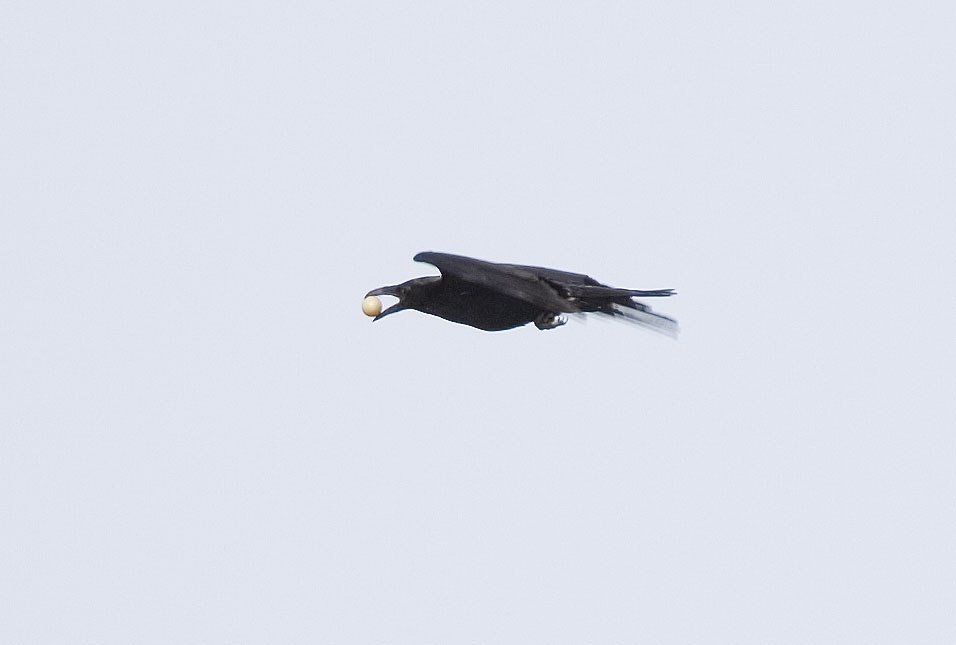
A Crow Flying With an Egg in its Mouth!

The lands of the refuge were established to protect and provide habitat for migratory birds that cross State lines and international borders and are by law a Federal trust responsibility.

The refuge is of great value to waterfowl and shorebirds, as well as other migrating water-dependent bird species, because of the diversity of wetland and upland habitats that provide for the diverse life cycle needs of these species.